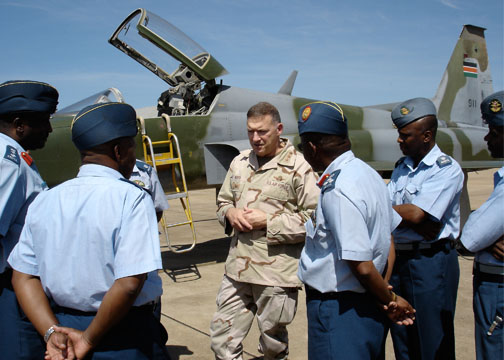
Leaders meet

The commander of U.S. Central Command Air Forces, Lt. Gen. Gary North, meets with operations and maintenance technicians and tactical level pilots during a facilities and flight line tour at Laikipia Air Base, Nairobi, Kenya, this week.